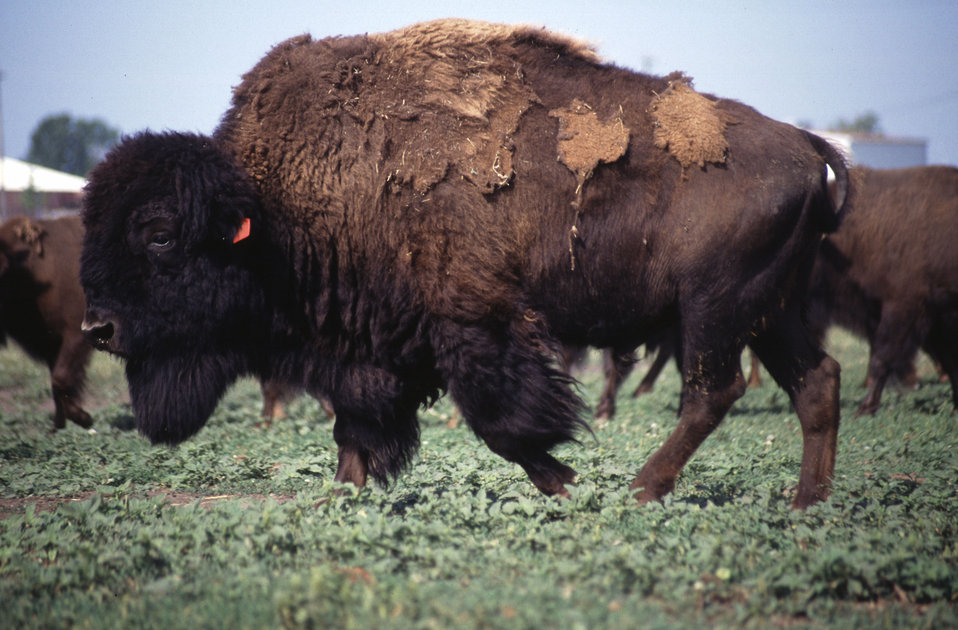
This bison is part of a 13-head herd involved in a brucellosis vaccine study at the U.S. Department of Agriculture (USDA) National Animal Disease Center in Ames, IA.